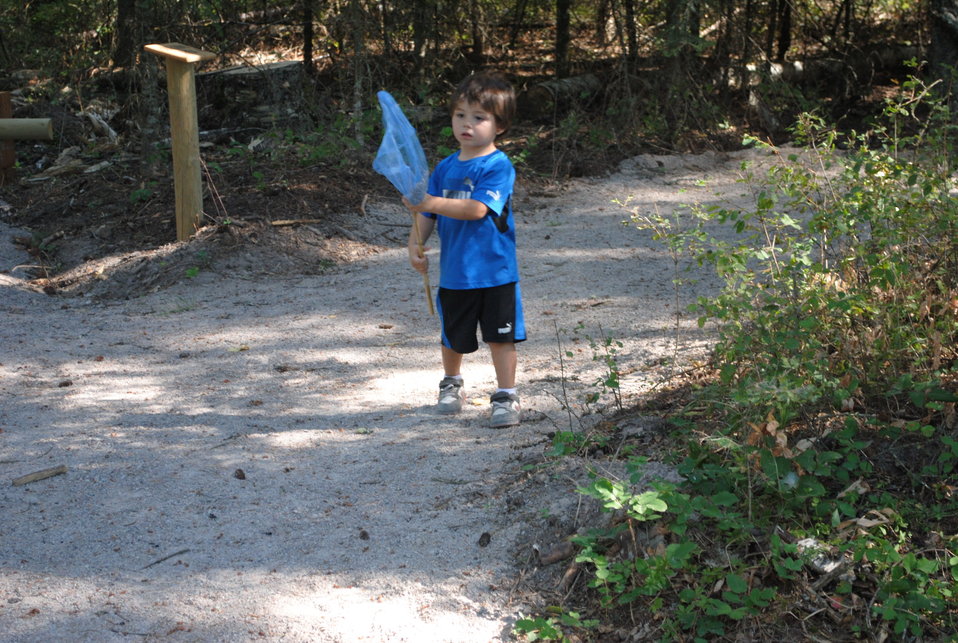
Creston National Fish Hatchery's Outdoor Classroom

A young child enjoys the new Outdoor Classroom at the Creston National Fish Hatchery.